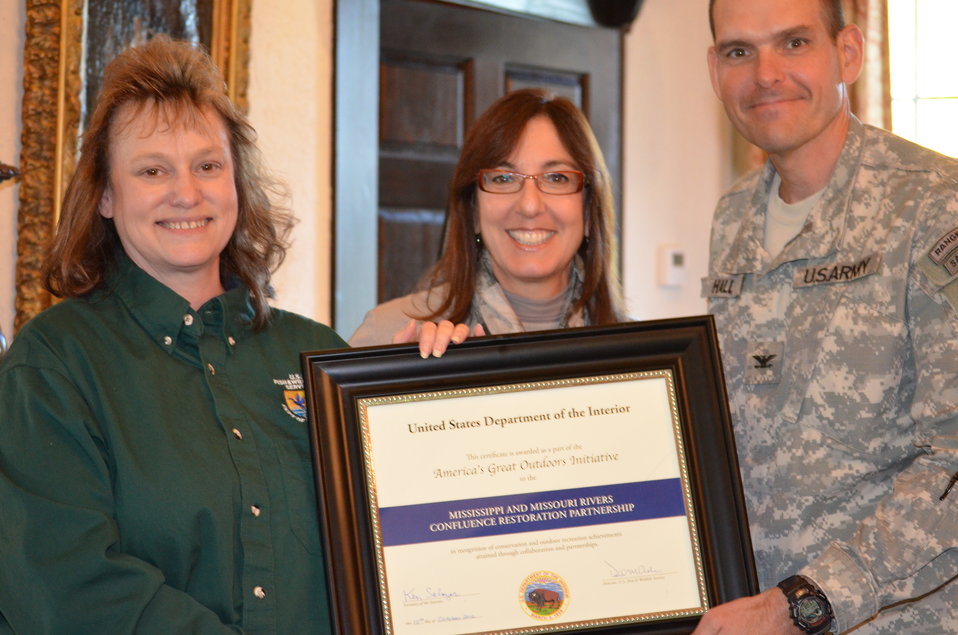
Honoring U.S. Army Corps of Engineers

Award presented to Col. Chris Hall, U.S. Army Corps of Engineers St. Louis District for his agency's role in confluence conservation efforts. USACE recently completed a hydrogeomorphic study that is a valuable contribution to ecosystem restoration options on public and private lands in the floodplain. USFWS/Ashley Spratt